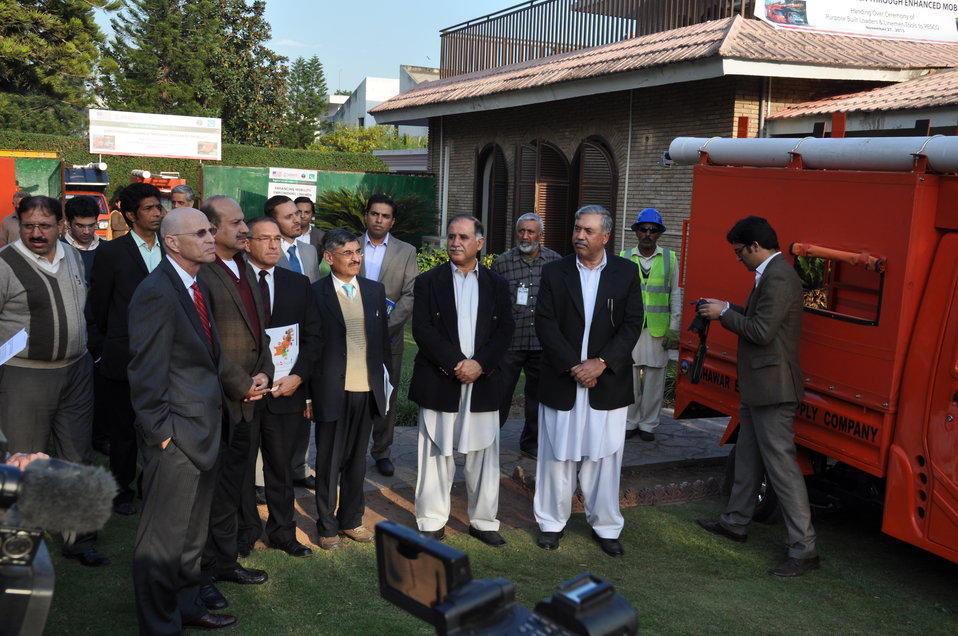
United States Government Strengthens PESCO Field Operations 08